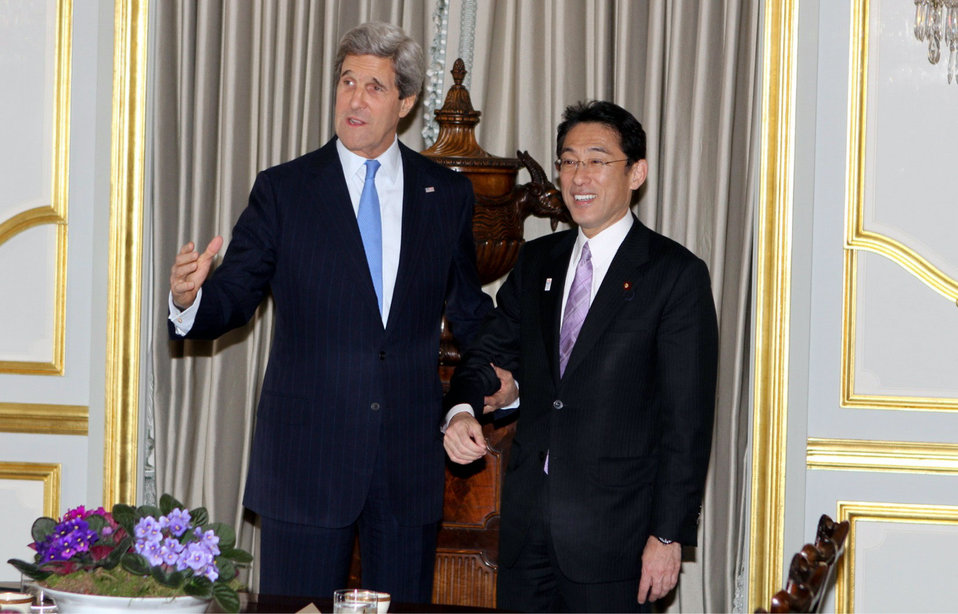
Secretary Kerry Meets With Japanese Foreign Minister Kishida

U.S. Secretary of State John Kerry meets with Japanese Foreign Minister Fumio Kishida at the Winfield House, the residence of the U.S. Ambassador, in London, United Kingdom, April 10, 2013.